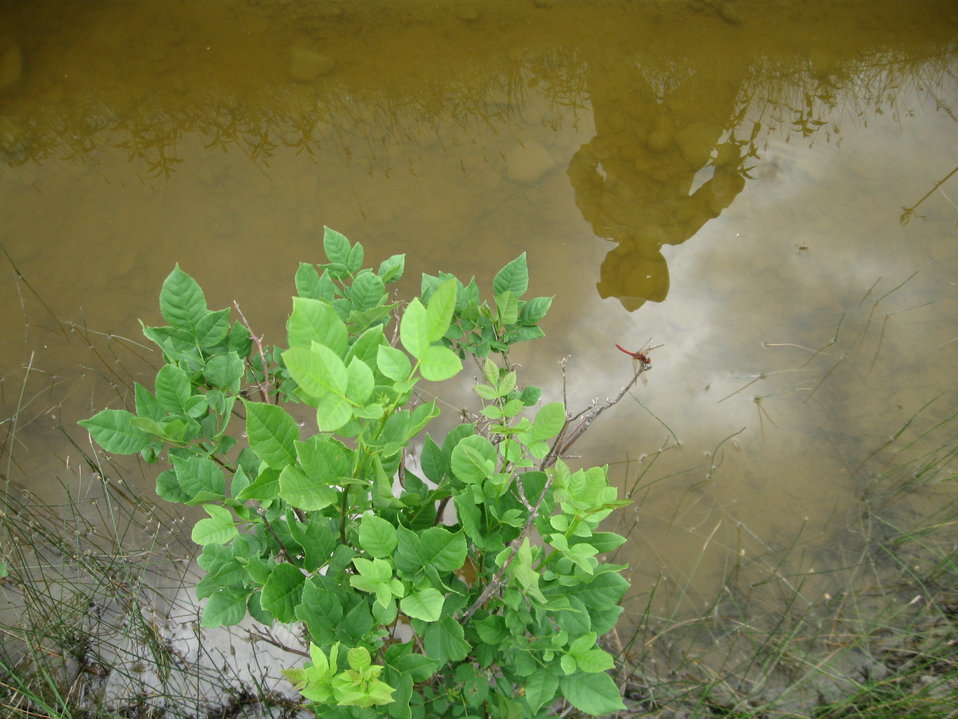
Dragonfly

A species of dragonfly known as a meadowhawk rests on a green ash in a riparian area at Charles M. Russell National Wildlife Refuge.